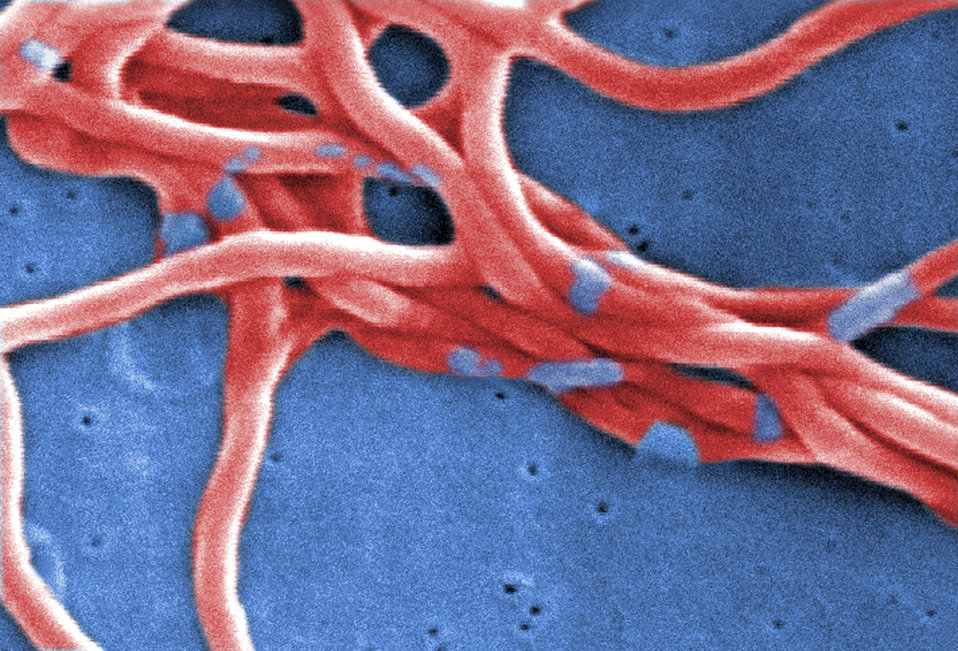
Under a high magnification, this digitally-colorized scanning electron micrograph depicts a grouping of Gram-negative, anaerobic, Borrelia burgdorferi bacteria, which had been derived from a pure culture.